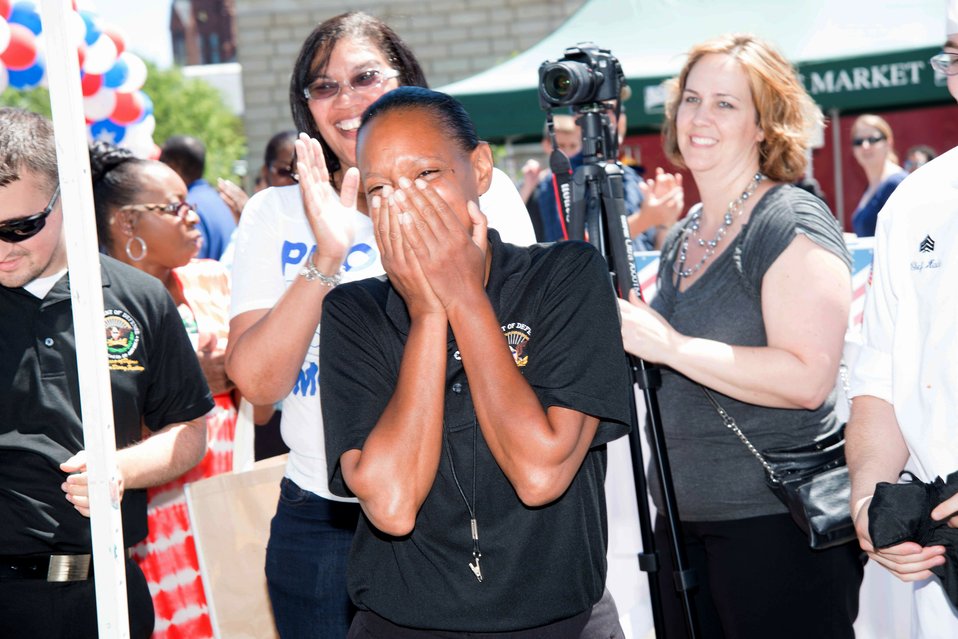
U.S. Army Sergeant (SGT) Monique Sorrell wins the Military Barbecue battle at the opening day of USDA’s Farmers Market in the east parking lot of USDA in Washington, D.C. on Friday, Jun. 6, 2014.